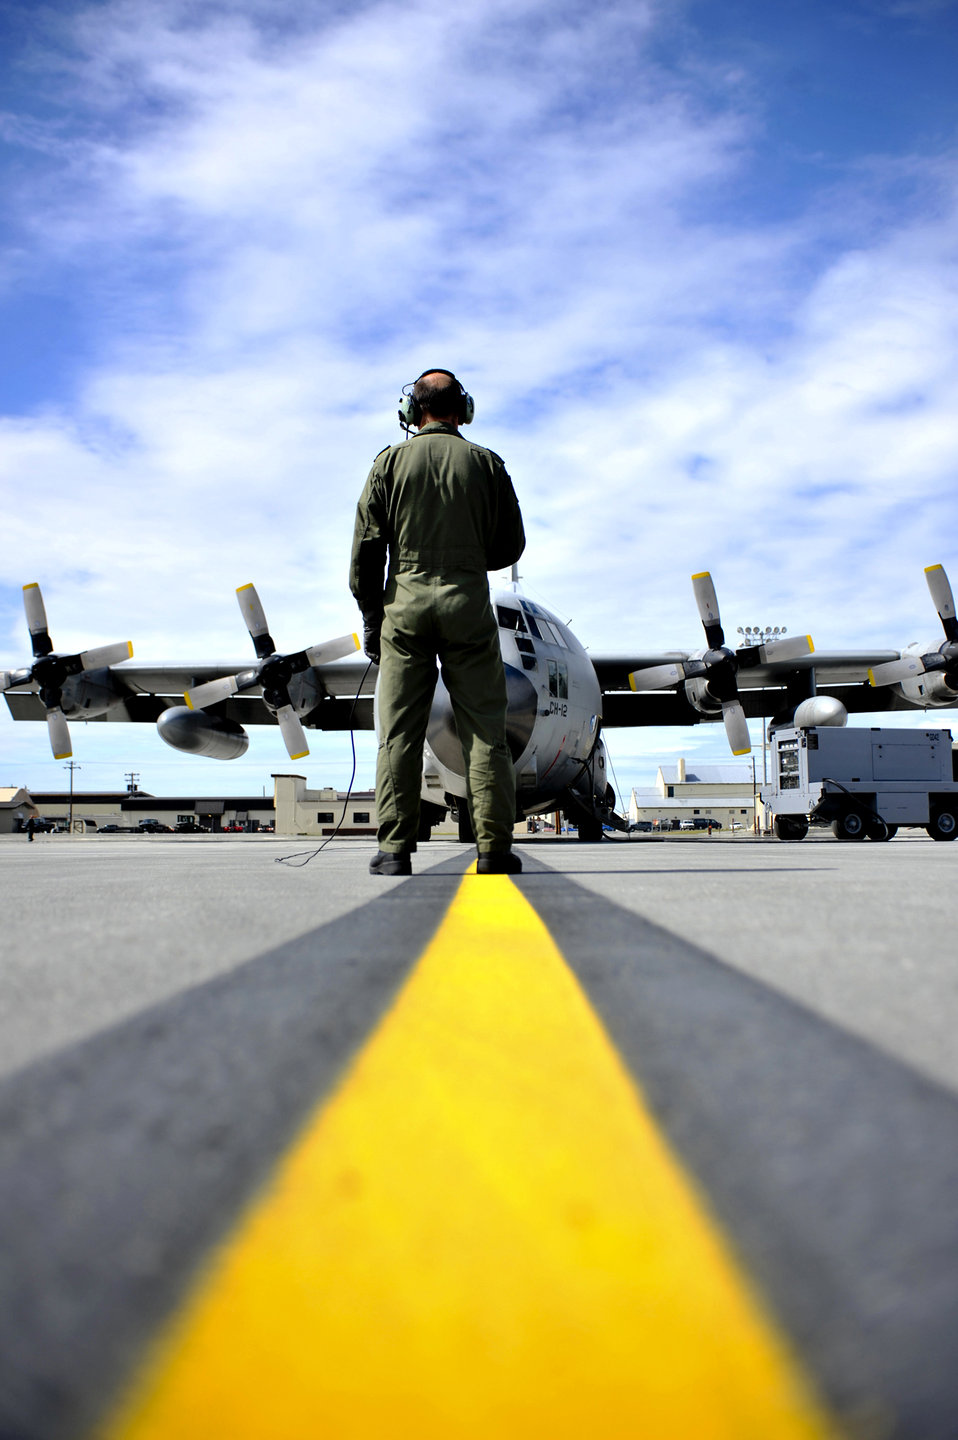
I walk the line

Belgian air component Adjudant Gert Van Den Berghe radios the pilot of a Belgian C-130 June 22, 2010, at Joint Base Elmendorf-Richardson, Alaska. This was the first time the air component of the Belgian armed forces has participated in Red Flag-Alaska. Van Den Berghe is a loadmaster with the 15th Air Transport Wing.